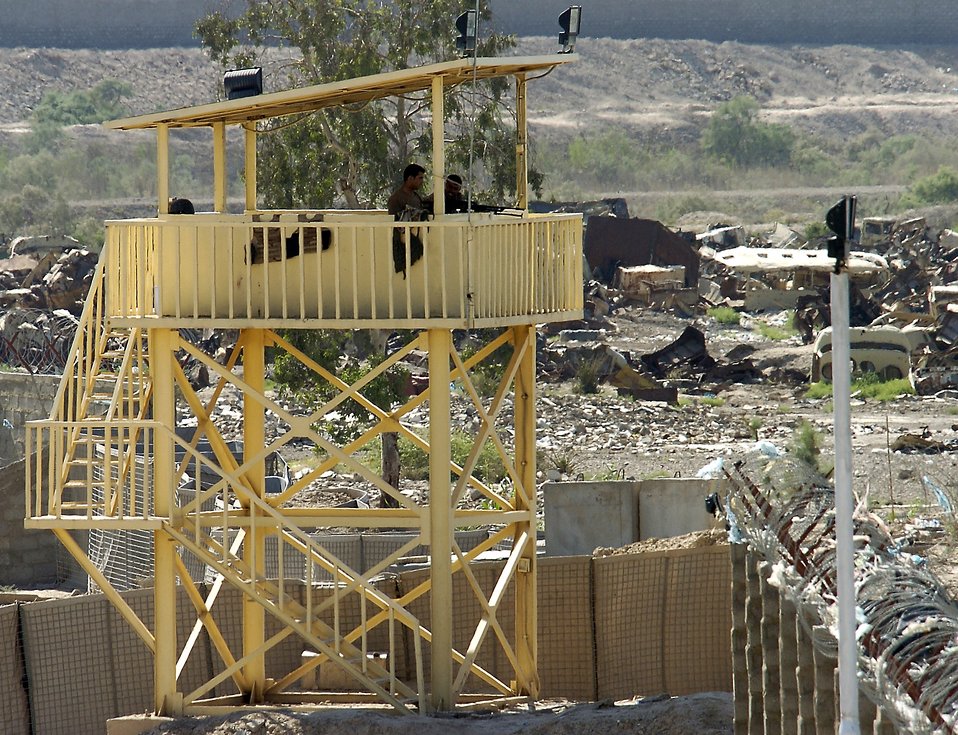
Airmen train Iraqi soldiers on base defense

Two Iraqi soldiers look for suspicious activity outside the walls of Ar Rasheed Base, Iraq, on Thursday, May 25, 2006. The soldiers are with the 1st Iraqi Army Division/Iraqi Intervention Forces, which provides the base defense for the compound. Five security forces Airmen and their Army commander live on the base and advise the Iraqi Army on base defense procedures.